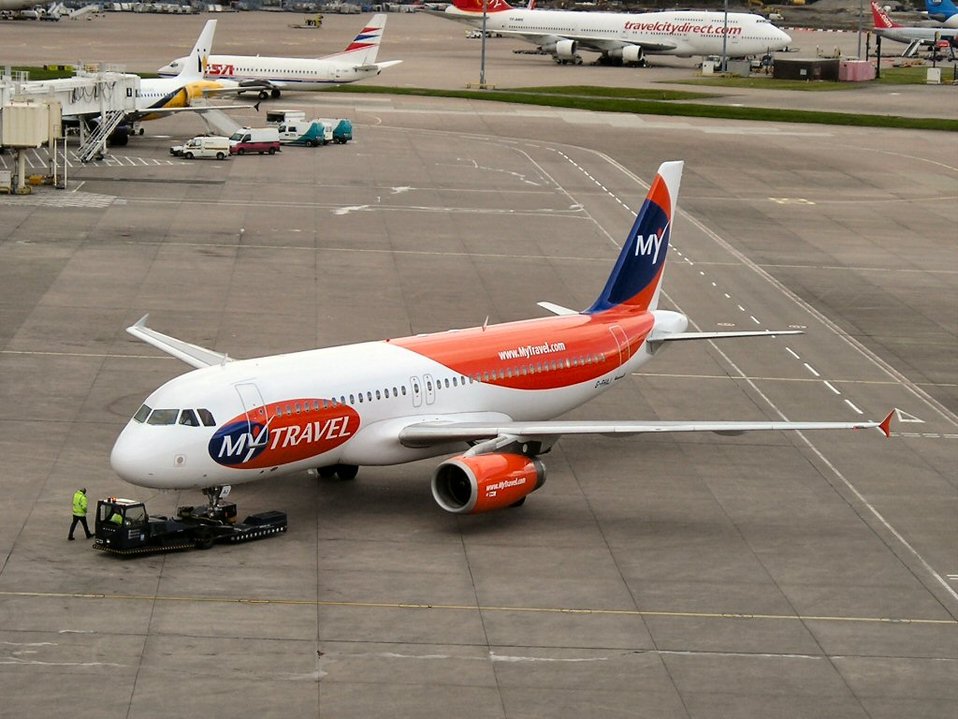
Image Taken By Myself
en:Category:Images of Airbus aircraft en:Category:Images of airliners